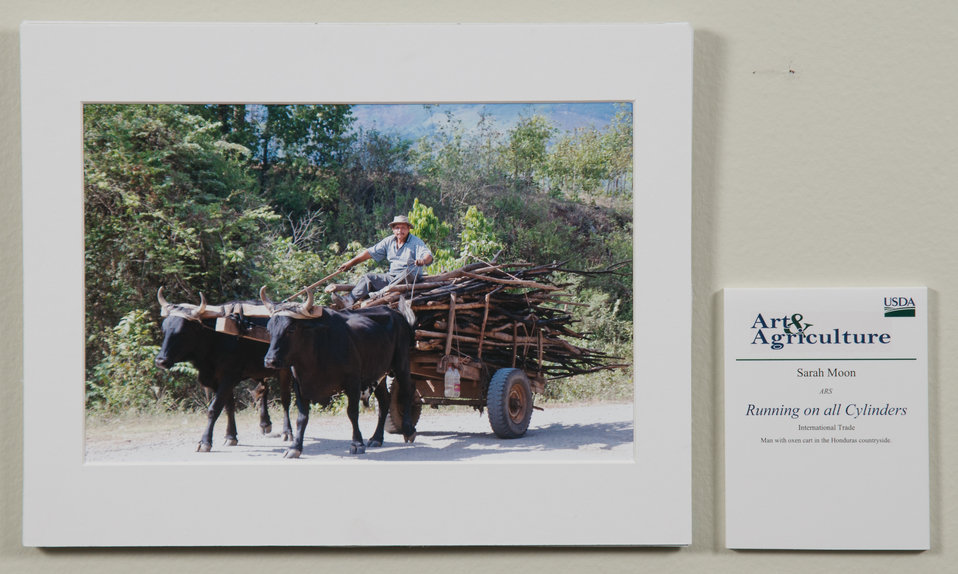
Online Viewer's Choice entries of the 2013 Art & Agriculture, Tuesday, July 9, 2013, in the South Building, Washington, D.C. Themes were expressed by employees from across the department and the contest was open to full-time and part-time USDA employees. Winning artwork will be displayed till the end of the year. U.S. Artistic expression is a creative outlet that is vital for an individual to grow and develop.